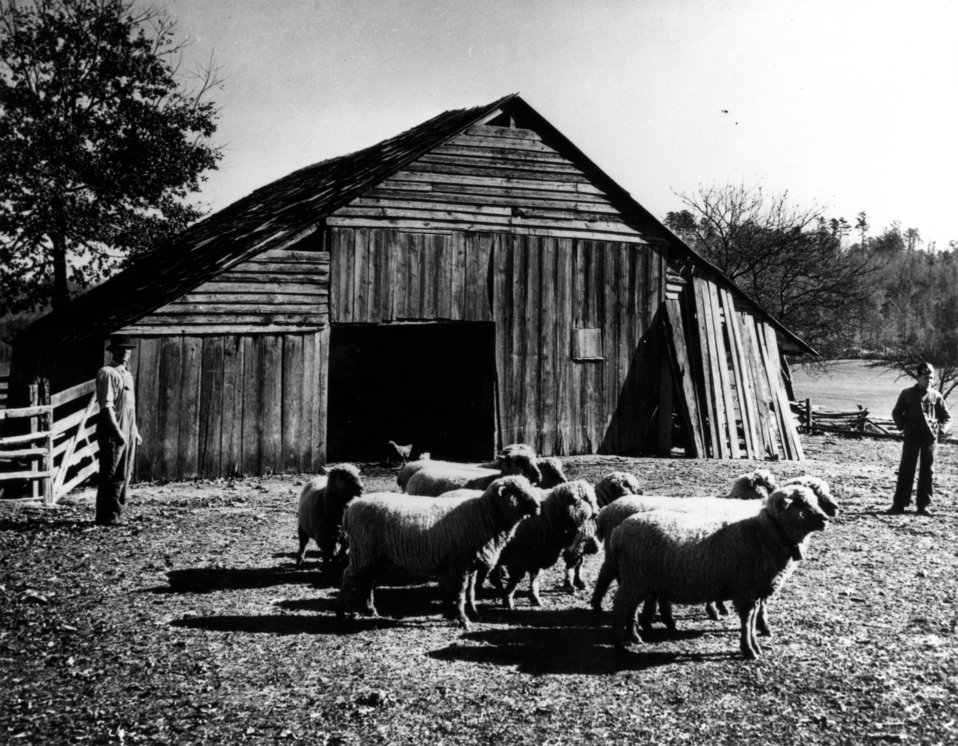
Early settlers at Oak Ridge